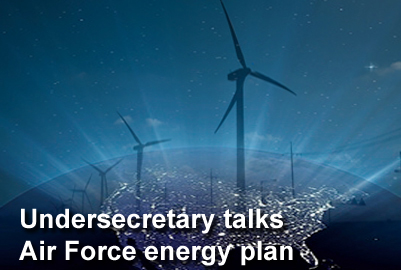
Undersecretary talks about Air Force's energy plan at White House forum